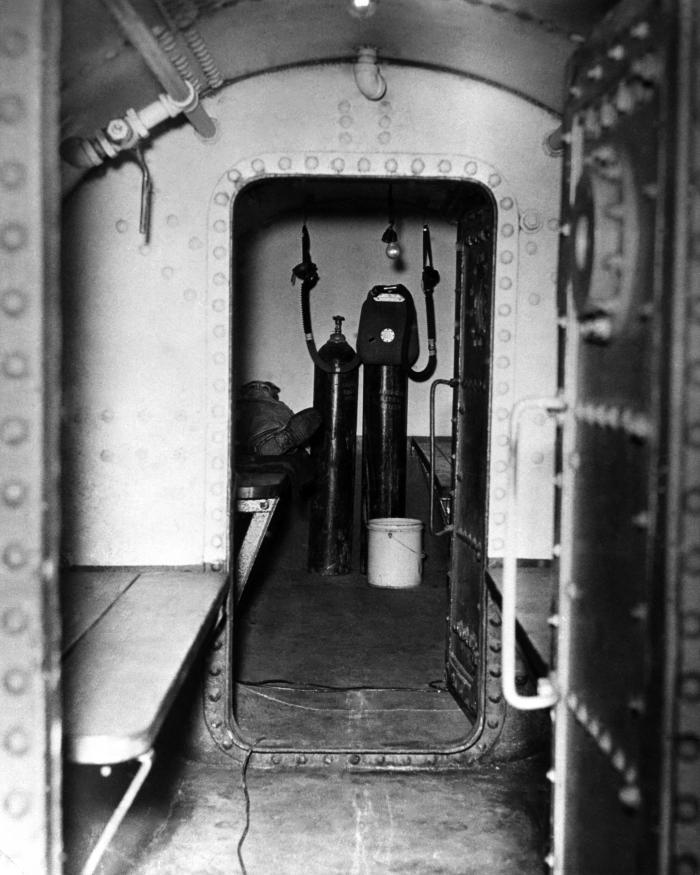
This historical image was provided by the Center for Disease Control's (CDC), National Institute for Occupational Safety and Health (NIOSH). The photograph depicted a man lying down inside a chamber inside the Queens Midtown Tunnel, in Queens, New York. Note the canisters of compressed air inside the tunnel chamber beside the sleeping worker.